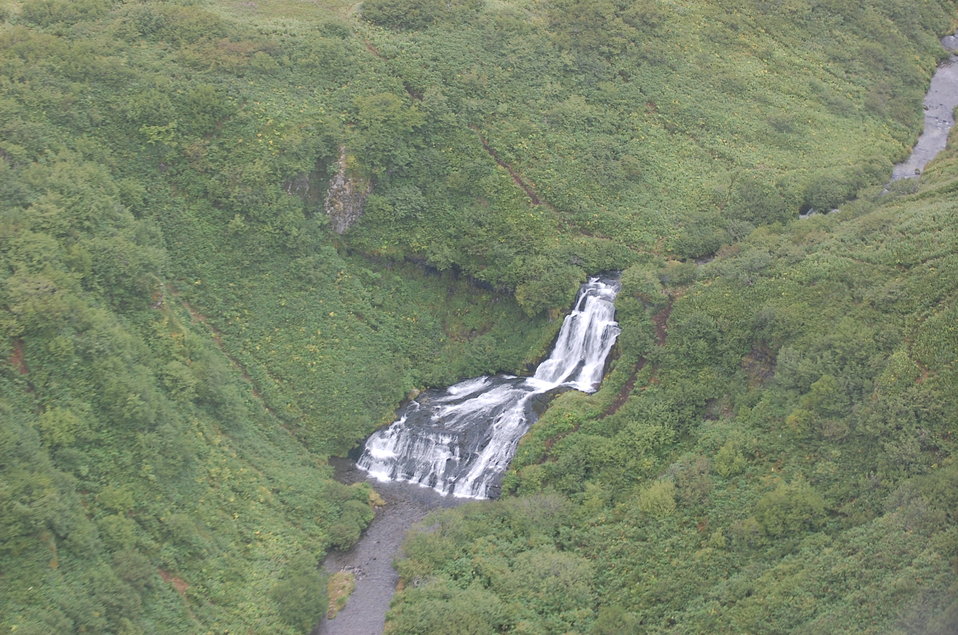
Unimak Landscapes

SE Unimak Island, Alaska Maritime National Wildlife Refuge